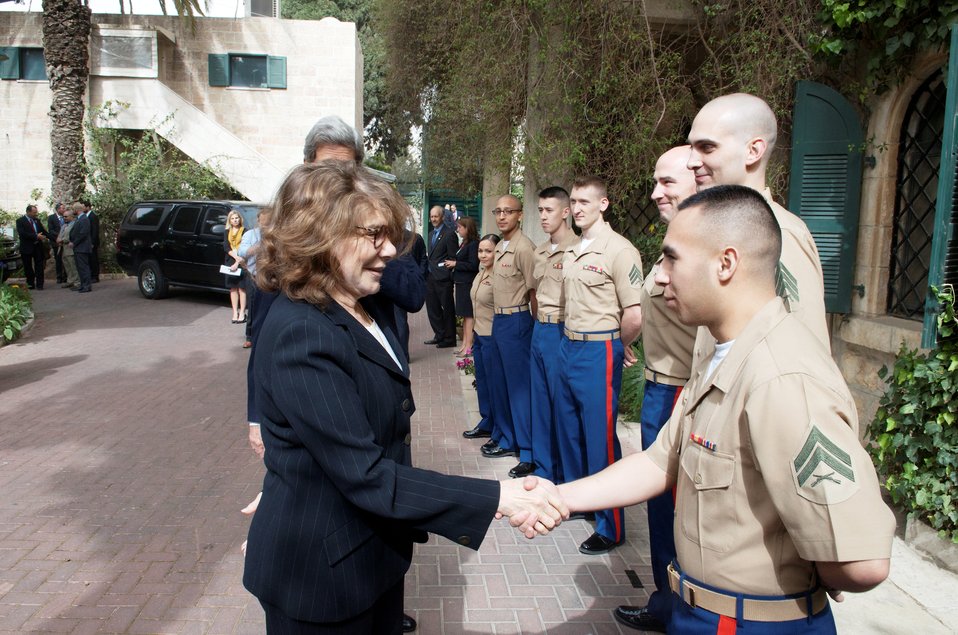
Mrs. Heinz Kerry Shakes Hands With Marine Security Guards

Mrs. Teresa Heinz Kerry speaks with U.S. Marine Security Guards at the U.S. Consulate General in Jerusalem on April 8, 2013.